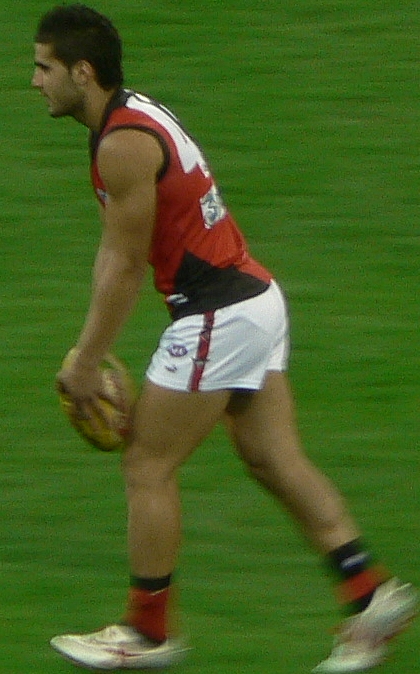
Bachar Houli, Australian rules footballer